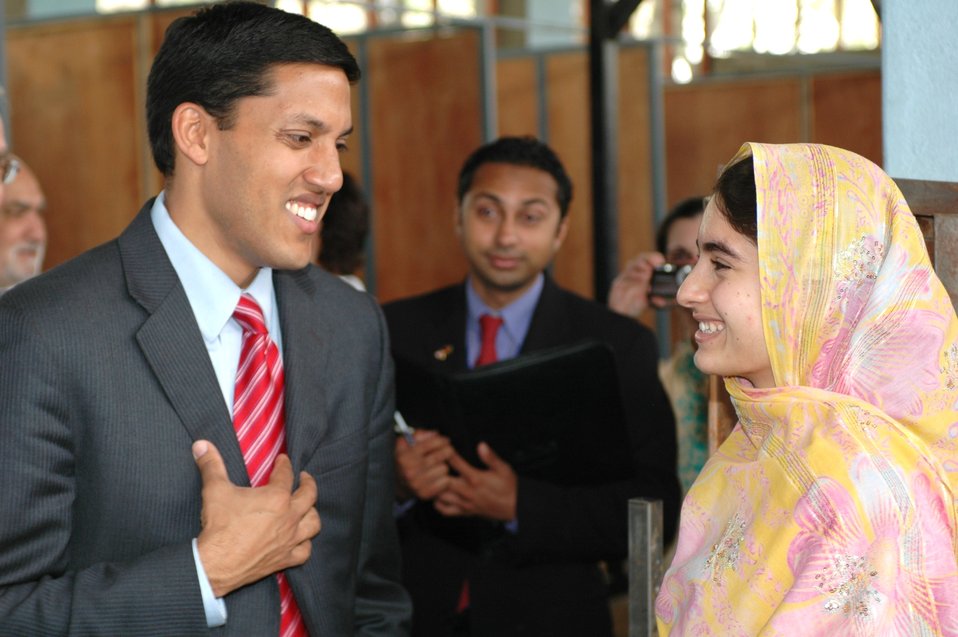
Dr Shah Visits Votech in Kabul